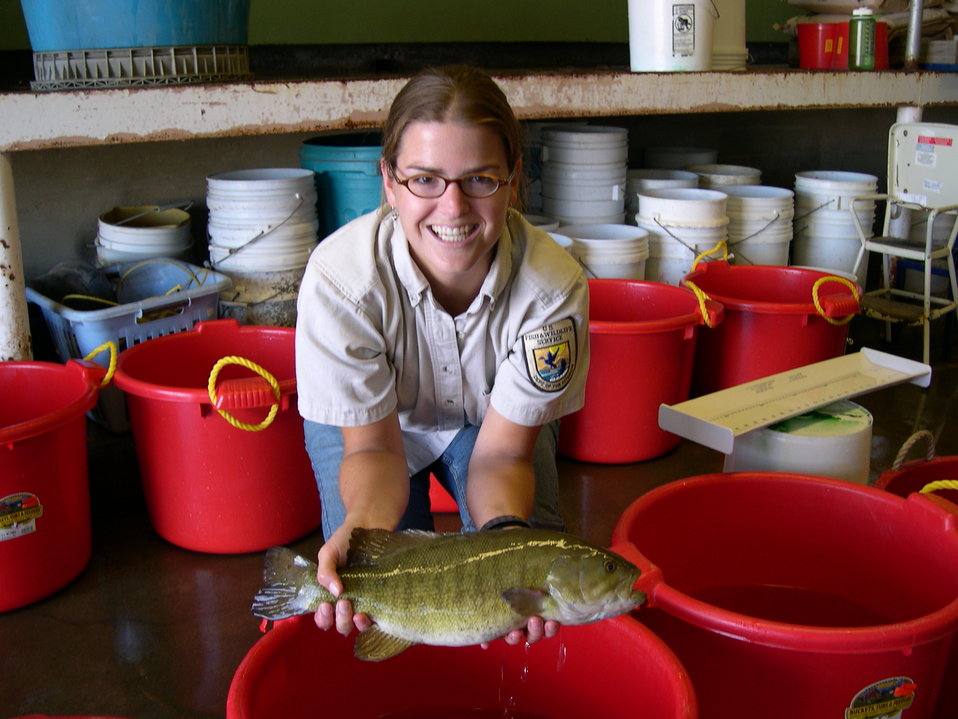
Molly Bowman

Molly working with smallmouth bass at Miles City SFH during a field efficacy study.

Rachel Carson Award for Scientific Excellence (Group) – 2013